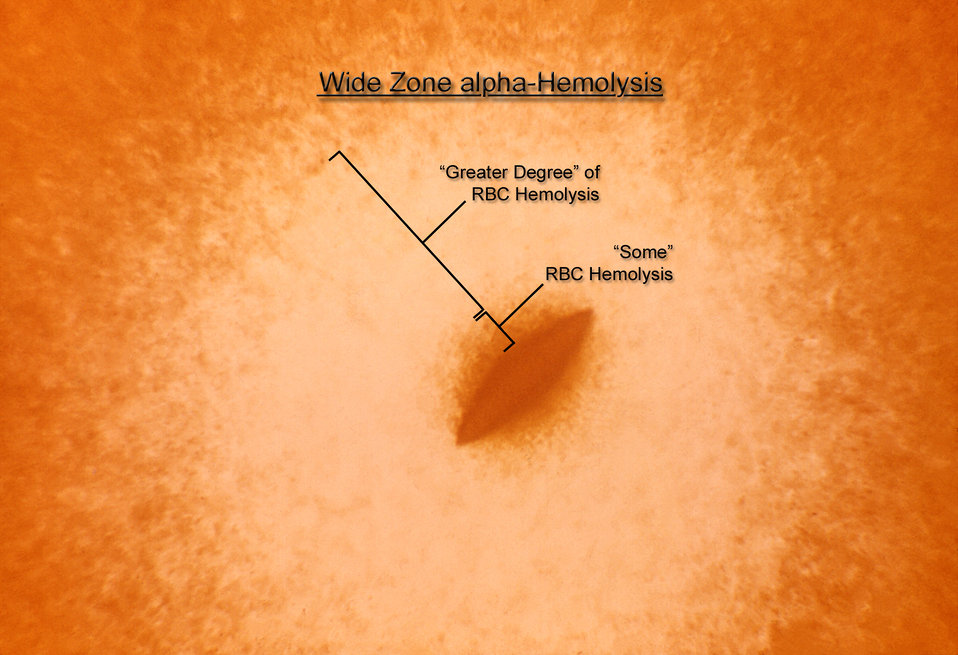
Magnified 100x, this 1977 photograph depicted a Petri dish filled with heart infusion agar medium containing 5% defibrinated rabbit blood, i.e., blood agar plate (BAP). A loop of diluted culture of Streptococcus anginosus was put into the melted agar (50oC) just before the blood was added to the melted agar. The agar was allowed to solidify, and then incubated at 35oC for 24 hours in a normal atmosphere. The culture grew subsurface bacterial colonies, one of which is seen here, surrounded by what is known as "wide zone alpha hemolytic" (WZα) color changes. Characteristics of WZα reactivity are described as, "the area immediately adjacent to the colony has some red blood cells (RBCs), but an area outside of that may be completely, or nearly completely, cleared of RBCs. Therefore, there are no reactive zones where "complete" RBC hemolysis has occurred, as in the case in beta-hemolytic reactions, hence the Wide Zone "alpha" terminology.